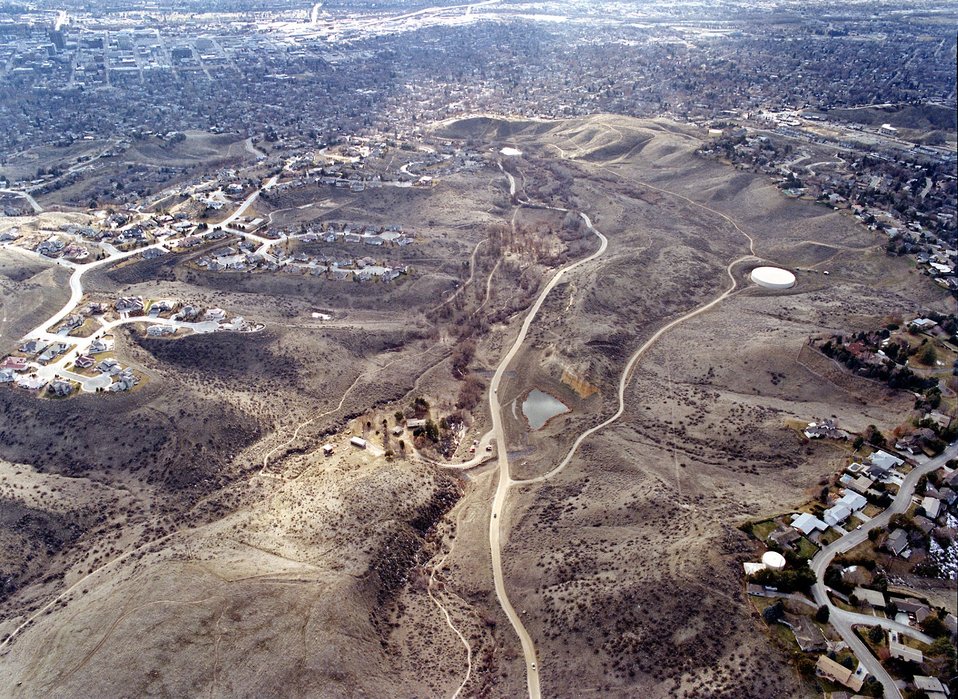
Recreation on the Boise Front Foothills Aerial Camels Back Park Four Rivers Field Office LSRD Lower Snake River District